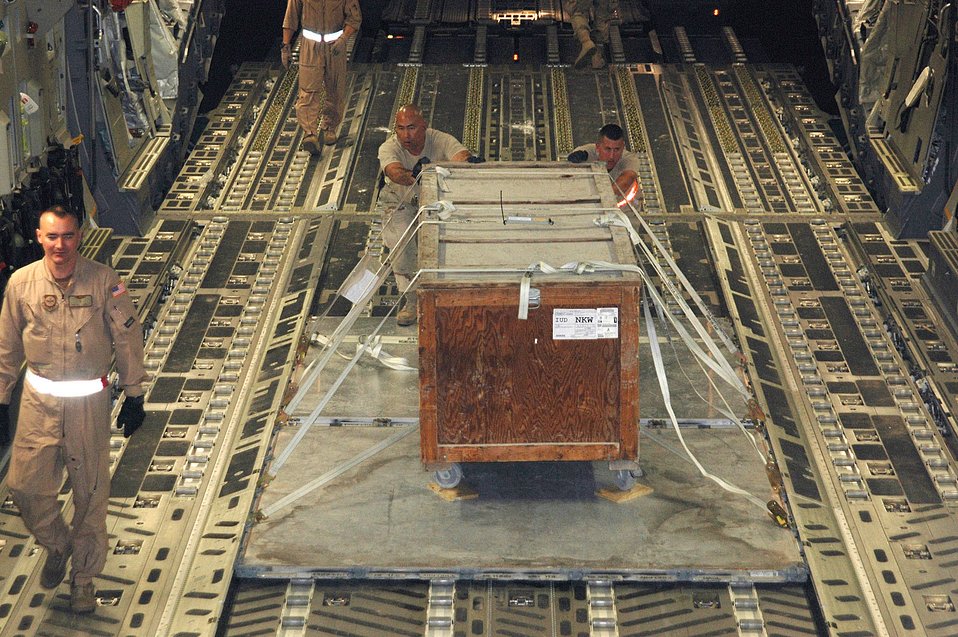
Long hours the norm for deployed Globemaster crews

Airmen from the 380th Air Expeditionary Wing air terminal operations center shove a pallet of cargo onto a C-17 Globemaster III before a Southwest Asia mission. Master Sgt. Bill Lambert (left), a C-17 loadmaster, monitors the task. The sergeant and aircraft are with Detachment 2, 817th Expeditionary Airlift Squadron. The unit flies C-17 Globemaster IIIs throughout the region, carrying troops and supplies.